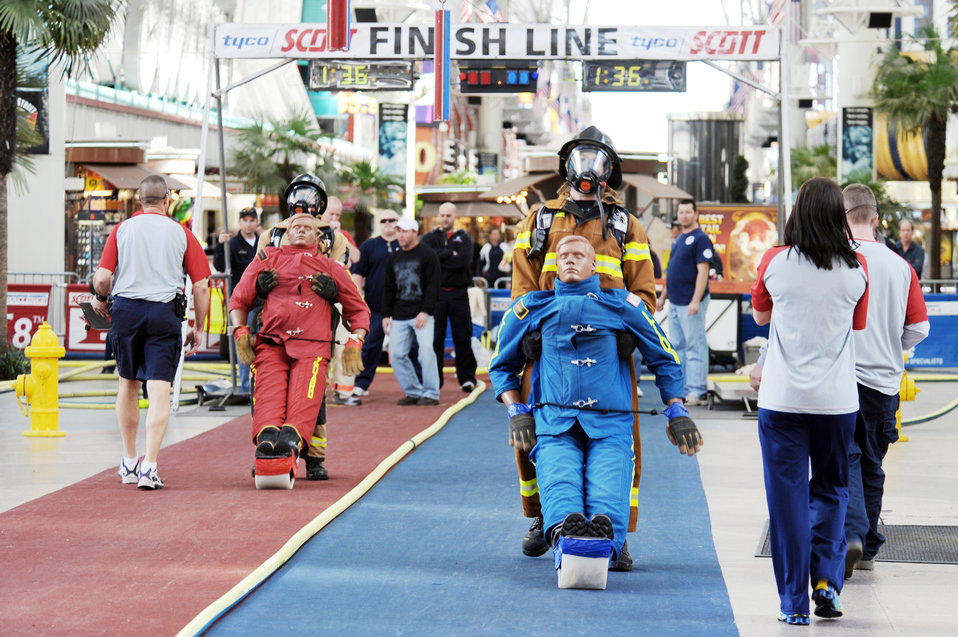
Airmen compete in 2009 Scott Firefighter Combat Challenge

Firefighters from all around the world compete in an individual firefighter event Nov. 17, 2009, at the 2009 Scott Firefighter Combat Challenge in Las Vegas.